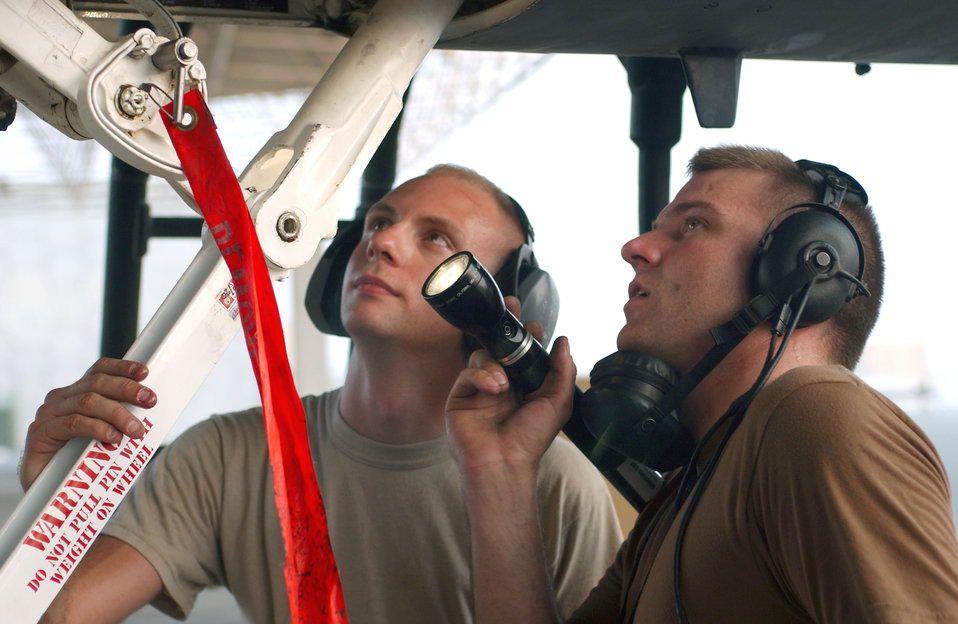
Iraqi/Enduring Freedom

Senior Airman Jeremiah Ostuni (left) and Staff Sgt. Jared Moor perform a nose landing gear functional check at a forward operating base in Southwest Asia on Aug. 13. The Airmen are assigned to the 335th Aircraft Maintenance Unit and are deployed from Seymour Johnson Air Force Base, N.C. Sergeant Moor is a repair and reclamation technician and Airman Ostuni is an assistant crew chief.